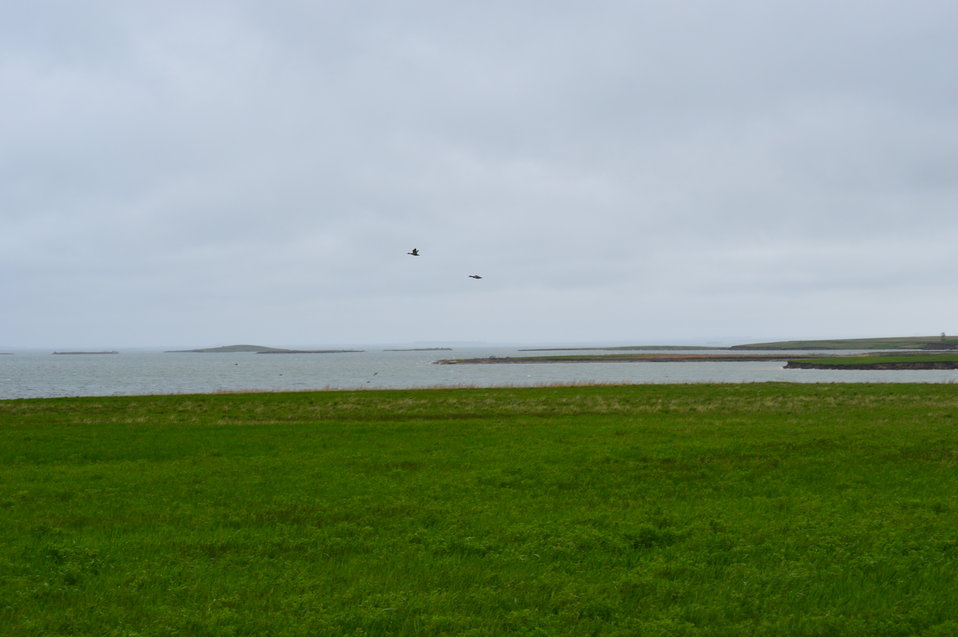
Audubon Lake

Scenery and wildlife and Audubon National Wildlife Refuge in North Dakota.